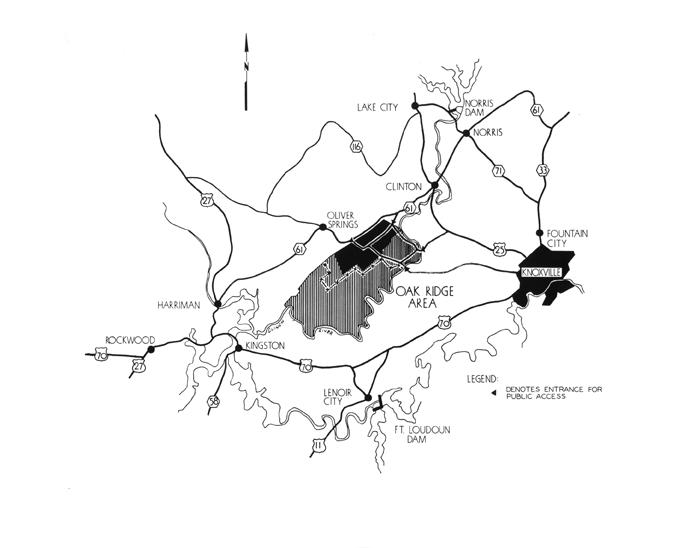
Map Oak Ridge Y-12